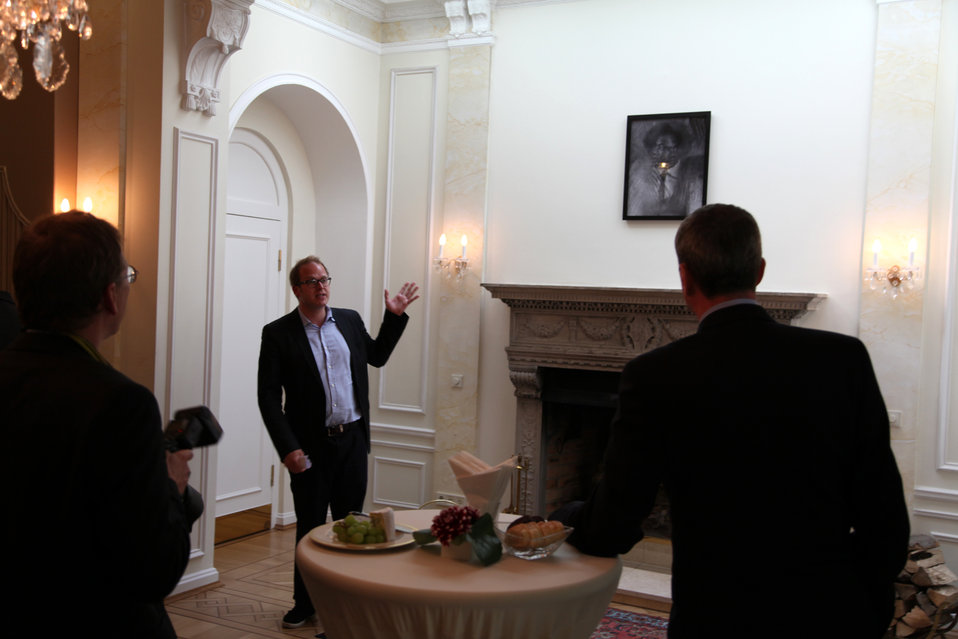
The Curator of an Art Exhibit Explains a Piece

Johannes Fricke Waldthausen shows a piece to art lovers during the opening of the third in a series of art exhibits on June 20, 2011, at U.S. Ambassador to Germany Philip D. Murphy’s residence in Berlin, Germany, on June 20, 2011.